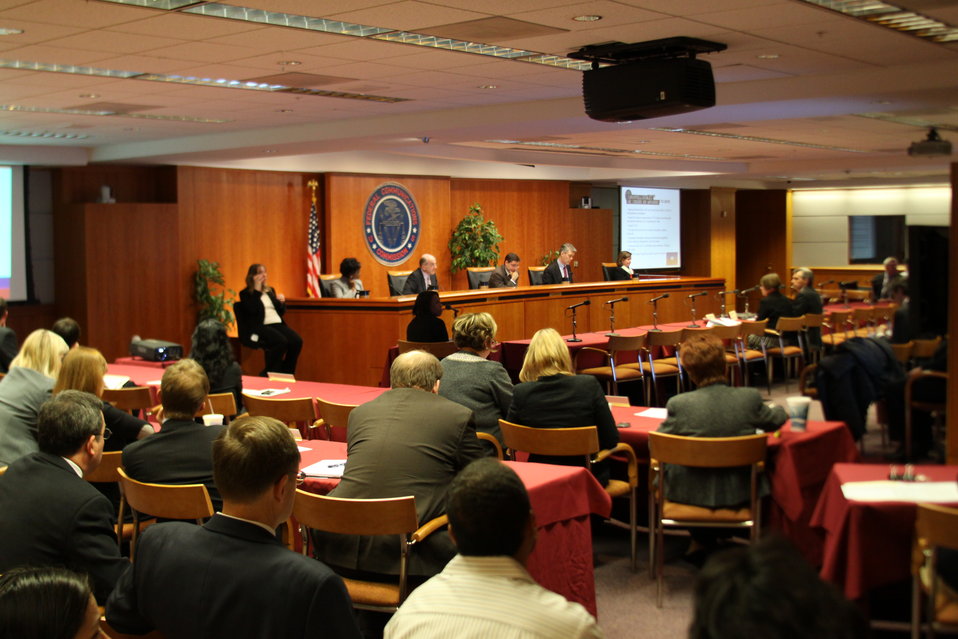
Open Commission Meeting - 2/18/2010

The Federal Communications Commission will hold an Open Meeting in Washington, DC. on February 18, 2010, which will include the following items:

E-Rate: An Order and Notice of Proposed Rulemaking to enable schools that receive funding from the E-Rate program to allow members of the general public to use the schools' Internet access during non-operating hours at no additional cost to the Universal Service Fund. This order and notice do not permit or require any changes to E-Rate applications due on February 11, 2010; Ex Parte Reform: A Notice of Proposed Rulemaking to improve the transparency and effectiveness of the FCC's decision-making process by reforming the ex parte rules; Procedural Reform: A Notice of Proposed Rulemaking to enhance the efficiency, openness, and transparency of the Commission's proceedings by improving and modernizing certain organizational and procedural rules; National Broadband Plan Status Report: Commission staff will report on the status of the National Broadband Plan, providing a framework for the national purposes portion of the Plan.